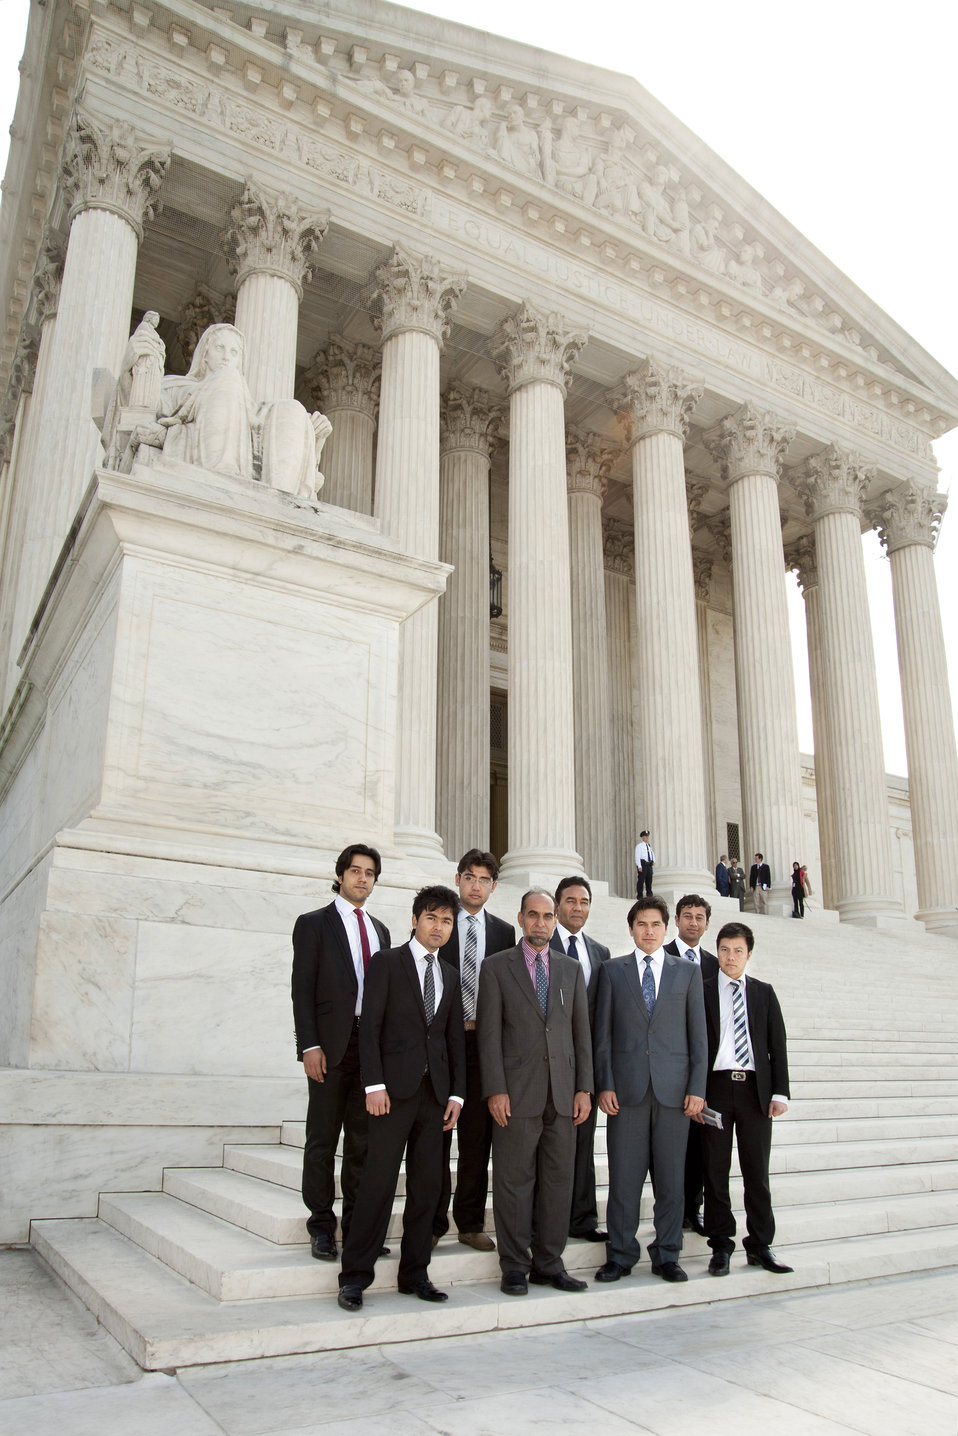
2012 Jessup Moot Court Competitors from Afghanistan Visit the Supreme Court

2012 Philip C. Jessup Moot Court Competitors from Afghanistan visit the Supreme Court of the United States in Washington, D.C., on March 29, 2012.